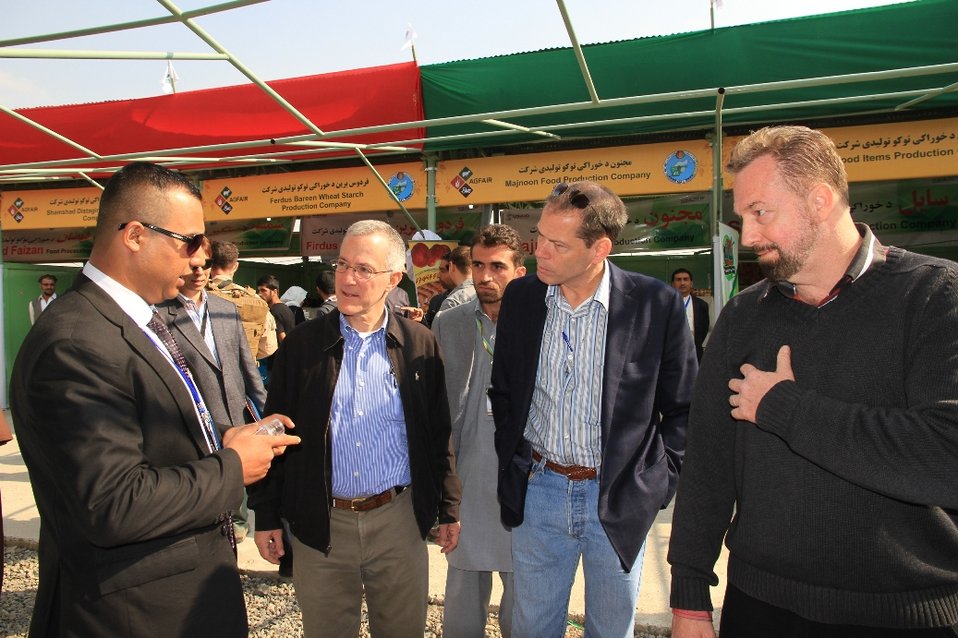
Ag.Fair, October 2013

Right: William Jeff (L), an IDEA-NEW consultant and USAID officials William Hammink (C) and Larry Sampler discuss Ag.Fair arrangements at Kabul International Ag.Fair, October, 2013